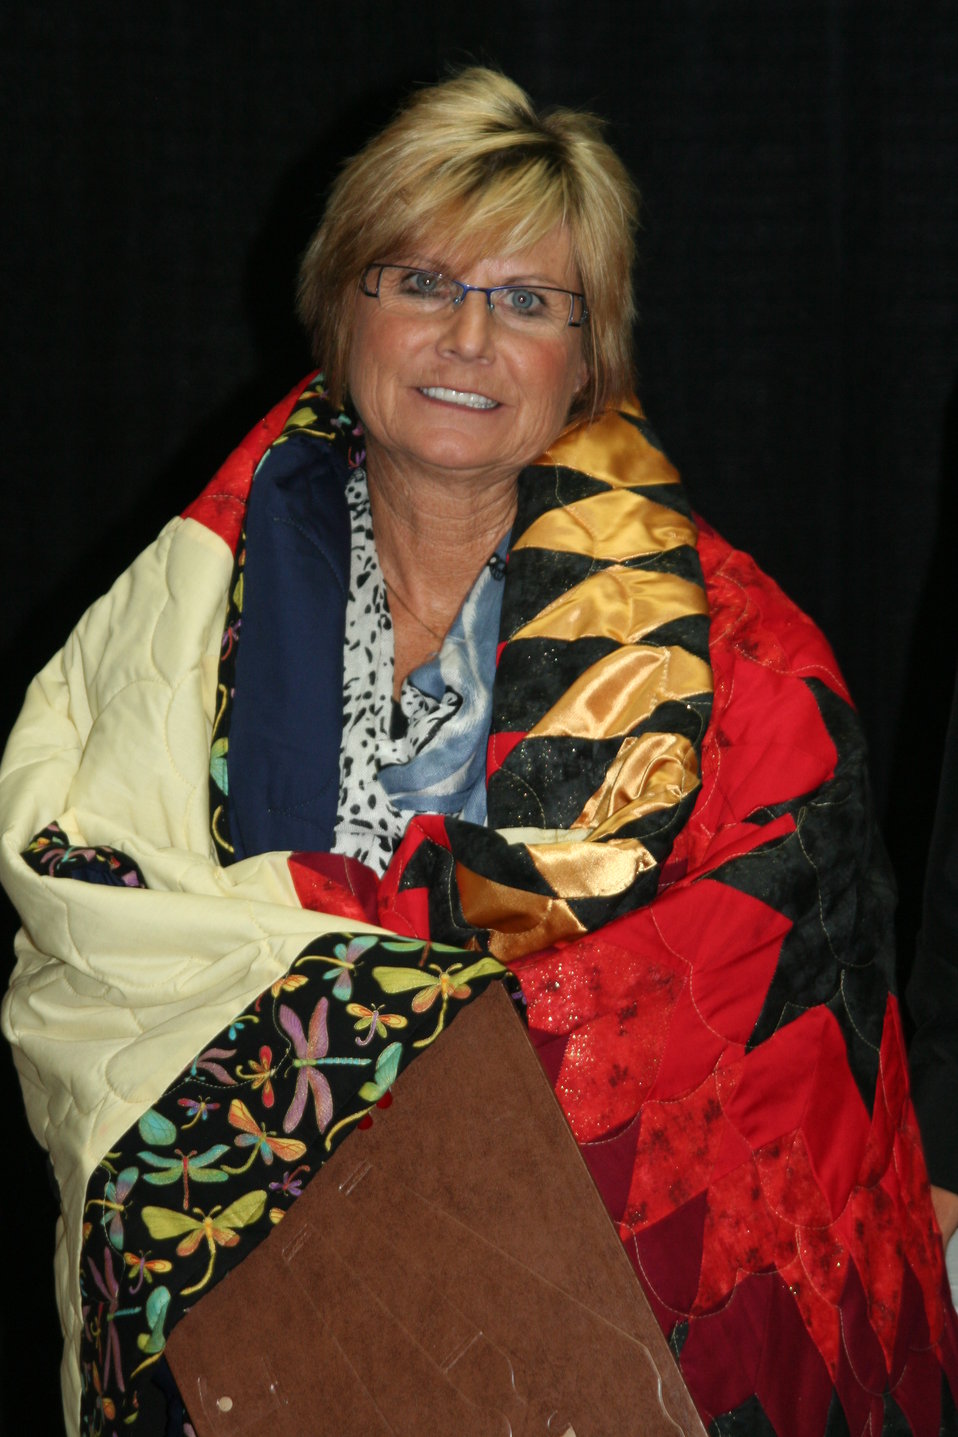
janelletelin

The Sisseton-Wahpeton Oyate Tribe of the Lake Traverse Reservation in northeast SD honors U.S. Department of Agriculture (USDA) Rural Development (RD) Area Specialist Janell Telin with a handmade star quilt on June 21, 2012. The Tribe recognized Telin for her unwavering dedication and ongoing assistance to the Tribe.